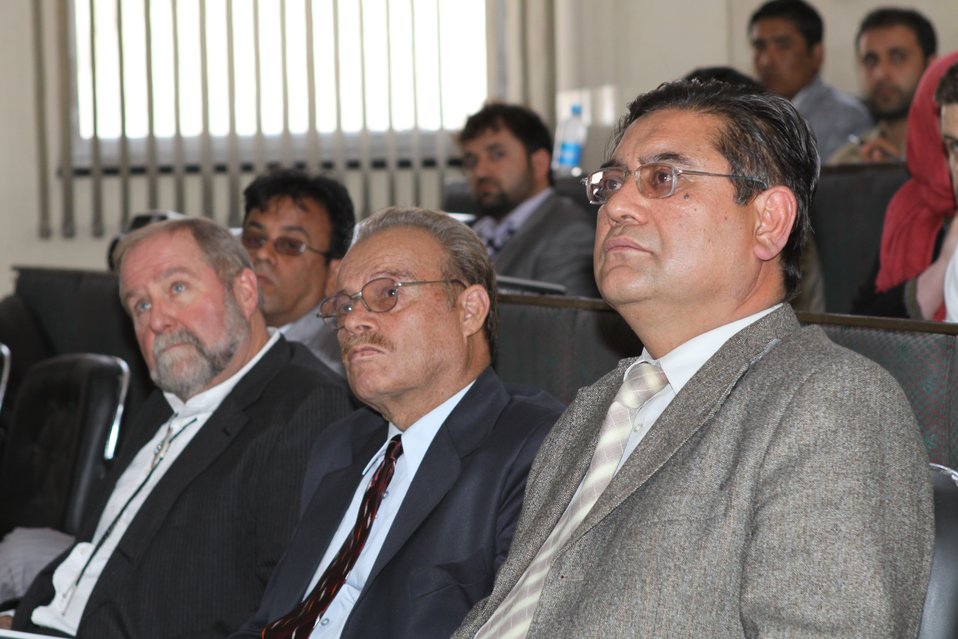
Female University Students Complete Internship

Kabul, Afghanistan | March 16, 2011 – In response to a demand for qualified Afghan engineers, Kabul University celebrated completion of an intensive five-month Mentor Protégé Training Program today by 10 female fourth year university students. The Training Program is a joint effort between the Government of the Islamic Republic of Afghanistan, the U.S. Agency for International Development (USAID), and the Universities of Kabul, Kandahar, Alberoony in Kapisa, Shiekh Zayed in Khost. The graduation ceremony highlighted collaboration with these national institutions in building the technical skills of young Afghans, made possible by USAID.

Four of the interns are engineers, while the remaining six are from the faculties of computer science, economics, and psychology.

Speaking about the event, H.E. Minister of Public Works Abdul Qudus Hamidi said, “The future of Afghanistan lies in developing the skills of our youth, and the engineering skills of these graduates today represent a small but important step forward for the country.”

Keynote speakers at the ceremony included H.E. Deputy Minister of Higher Education Abdul Rahim; USAID Senior Deputy Mission Director Robert Hellyer; and Chancellor of Kabul University Professor Hamidullah Amin. Approximately 150 people, including current and former students attended the graduation.

Launched last year, the Mentor Protégé Training Program has provided qualifying students the opportunity to intern with USAID’s Strategic Provincial Roads-South and East Afghanistan project and gain practical experience in a real work environment. The goal of the program was to offer interns the opportunity to gain hands-on experience to reinforce their formal studies. A total of 30 students from four national universities have benefitted from this program.

“The promotion of women’s rights is integrated into the overall U.S. Government development strategy and can be found in key programs, including education, healthcare, security, rule of law, political participation, agriculture, and economic development,” said Robert Hellyer. “The U.S. Government is committed to the Afghan leadership of programs that directly enhance development, particularly as it relates to women’s issues.”

This event also highlighted the learning achievements of students and emphasized the importance of hands-on internship programs. The curriculum is designed to instill students with the knowledge and confidence to qualify for engineering positions upon completion of their fourth year at their respective universities.